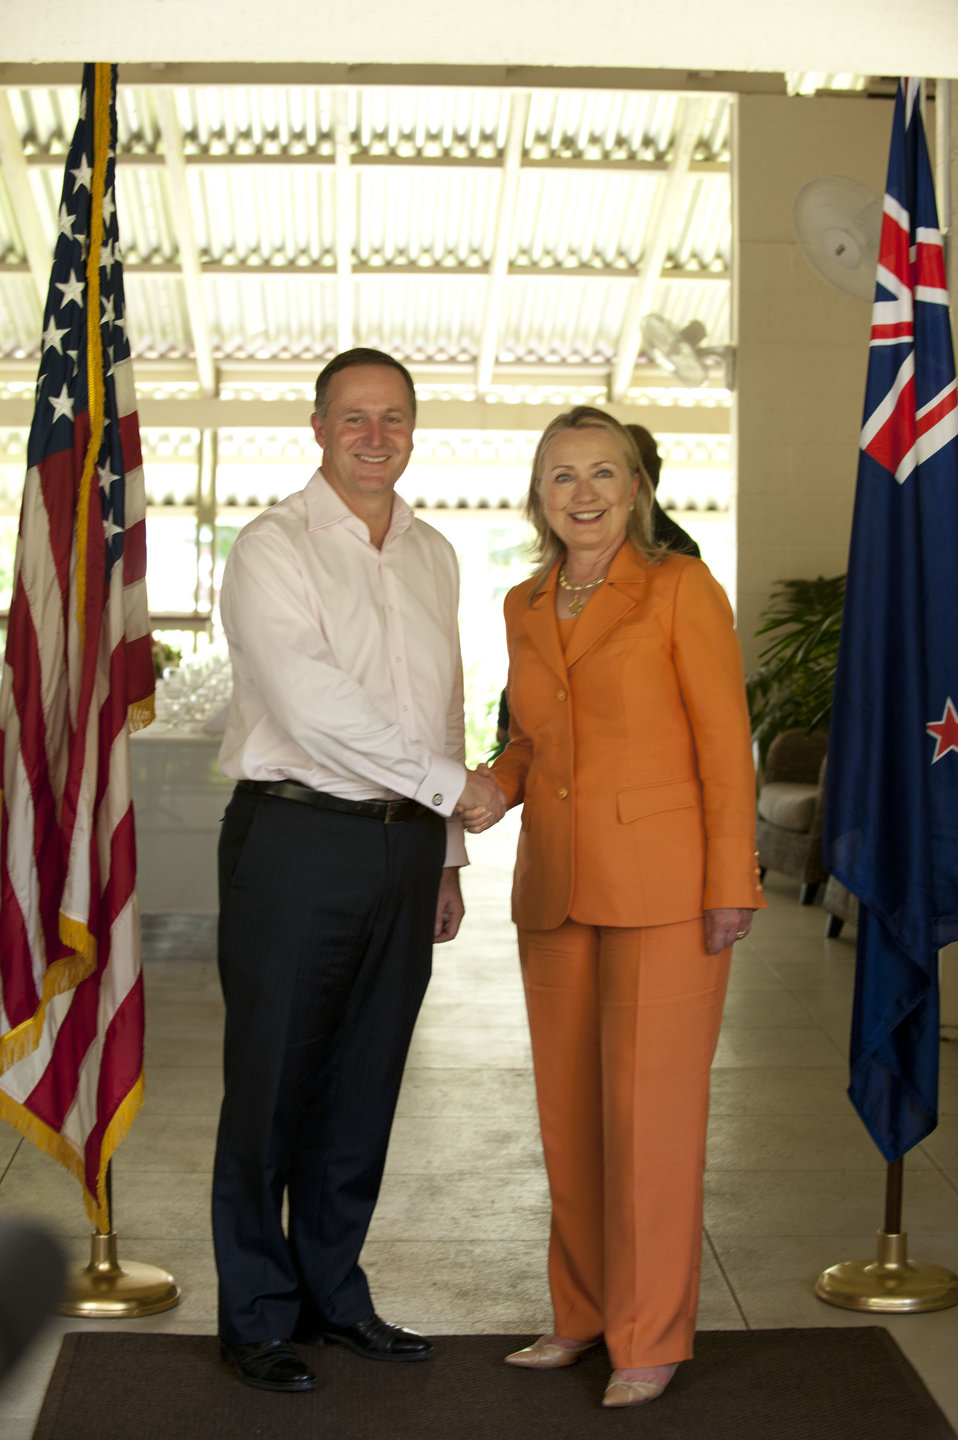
Secretary Clinton With New Zealand Prime Minister Key

U.S. Secretary of State Hillary Rodham Clinton and Prime Minister John Key of New Zealand shake hands at the Pacific Islands Forum in Rarotonga, Cook Islands, August 31, 2012.